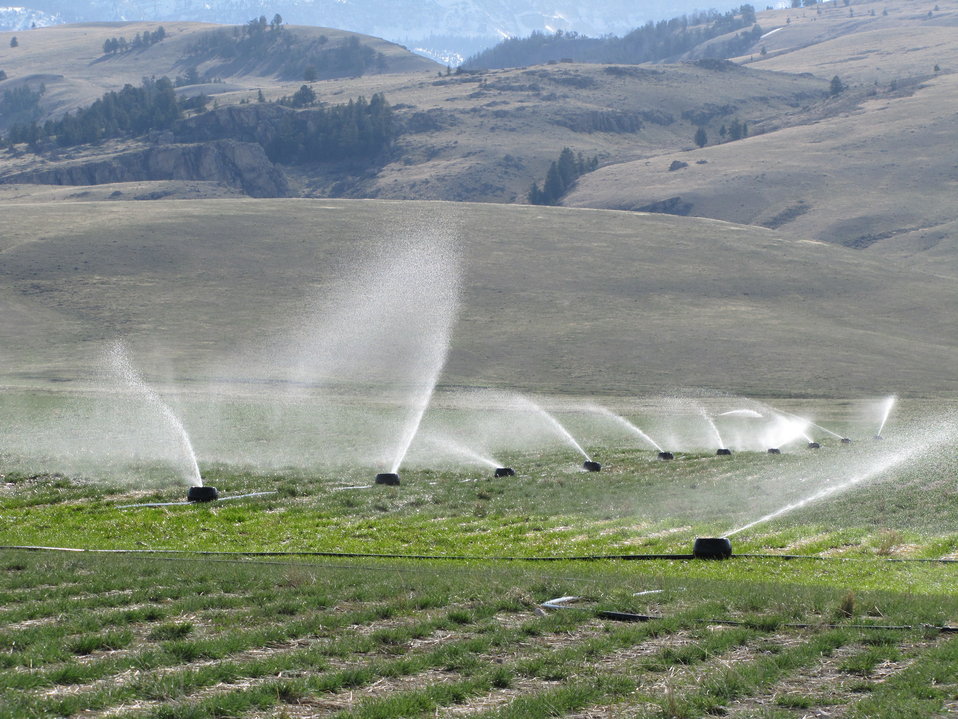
K-Line Irrigation System

Approximately 170 K-Lines were used in 2012 to irrigate just over 3,200 acres. Each K-Line is comprised of 13 portable pods that can be conveniently moved from one irrigation area to another through the use of a modified utility terrain vehicle (UTV).